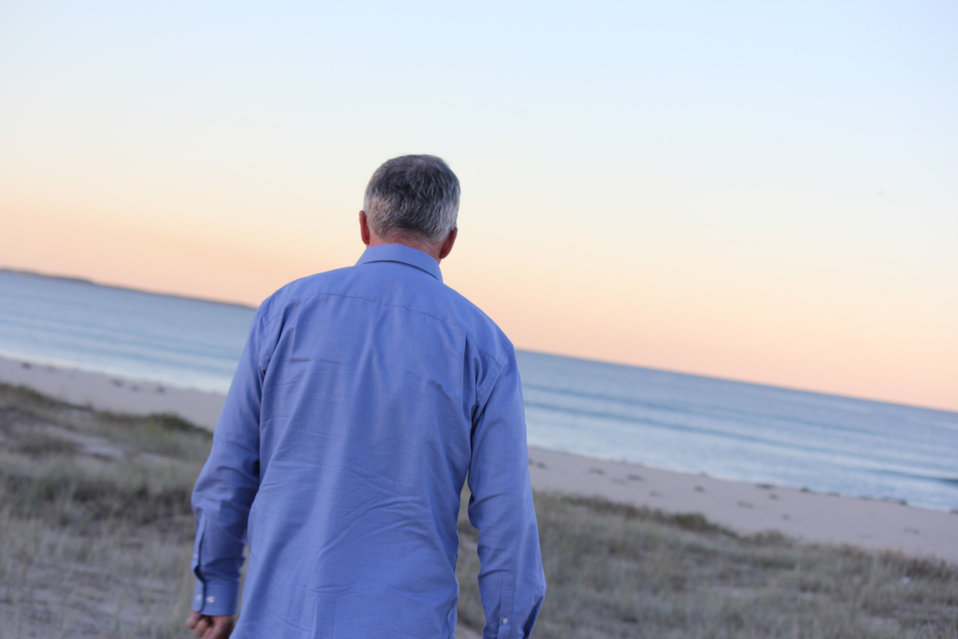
Walking away

Man in blue shirt walking on the beach looking down.